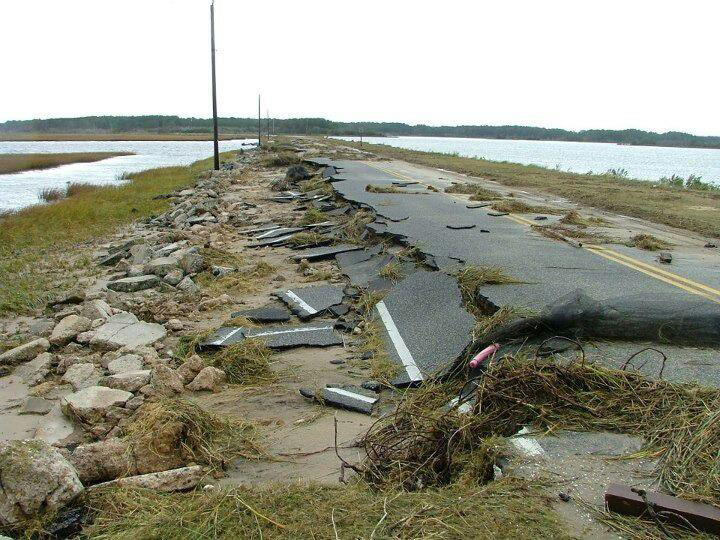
Hurricane damage at Chincoteague National Wildlife Refuge (VA)

Road to Assateague.